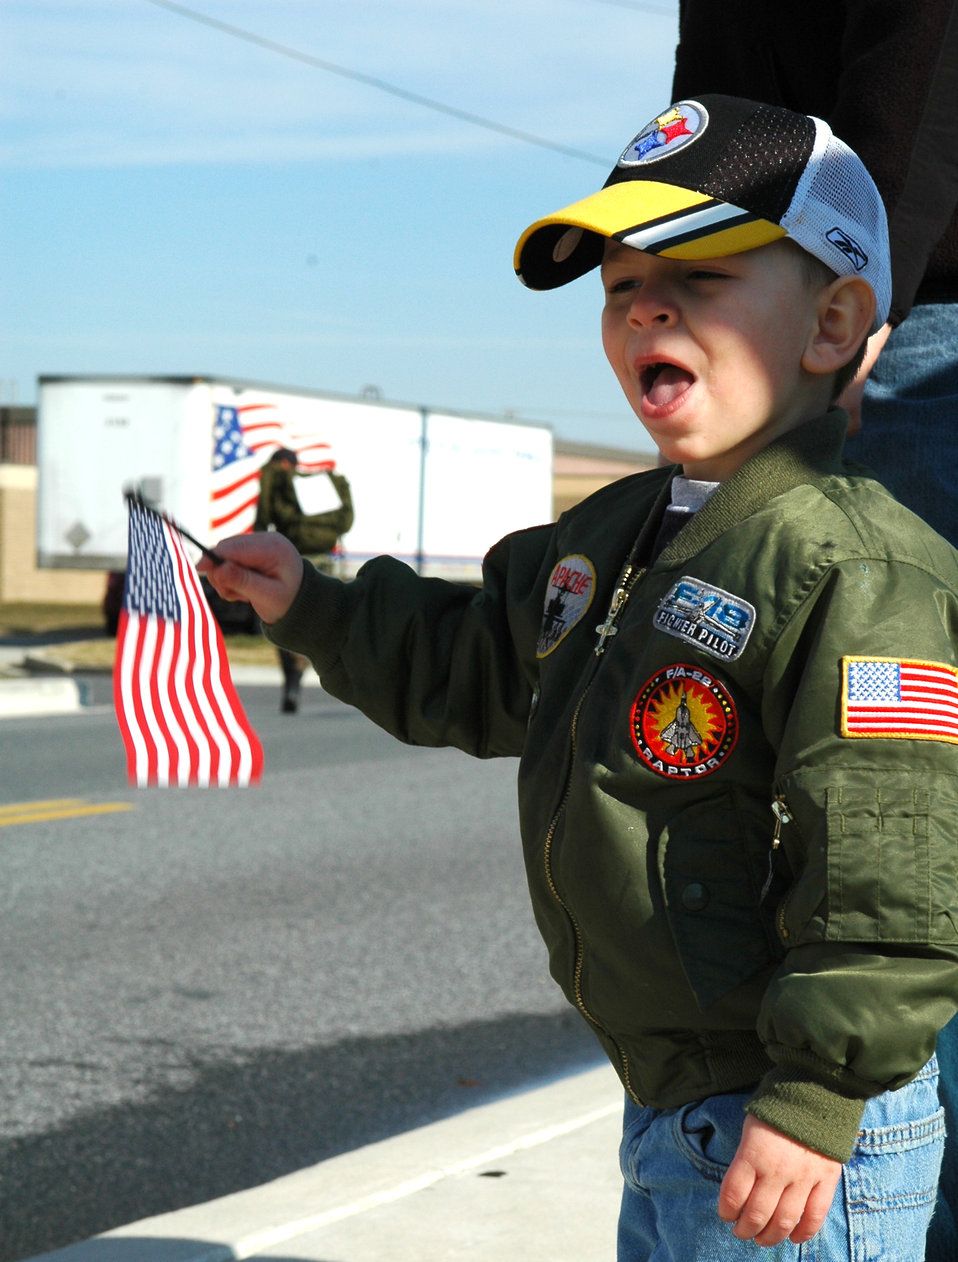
Dover marches for Korean War Veterans Team

Trestin Nicley, son of Staff Sgt. Brandon Nicely, cheers for participants of the 9th Annual Ruck March, Feb. 2 at the Air Mobility Museum at Dover Air Force Base, Del. Members of the Army, Marine Corps, and civilian sector joined Airmen in commemorating Veterans of the Korean War. Sergeant Nicely is a 436th Mission Support Squadron personnelist,